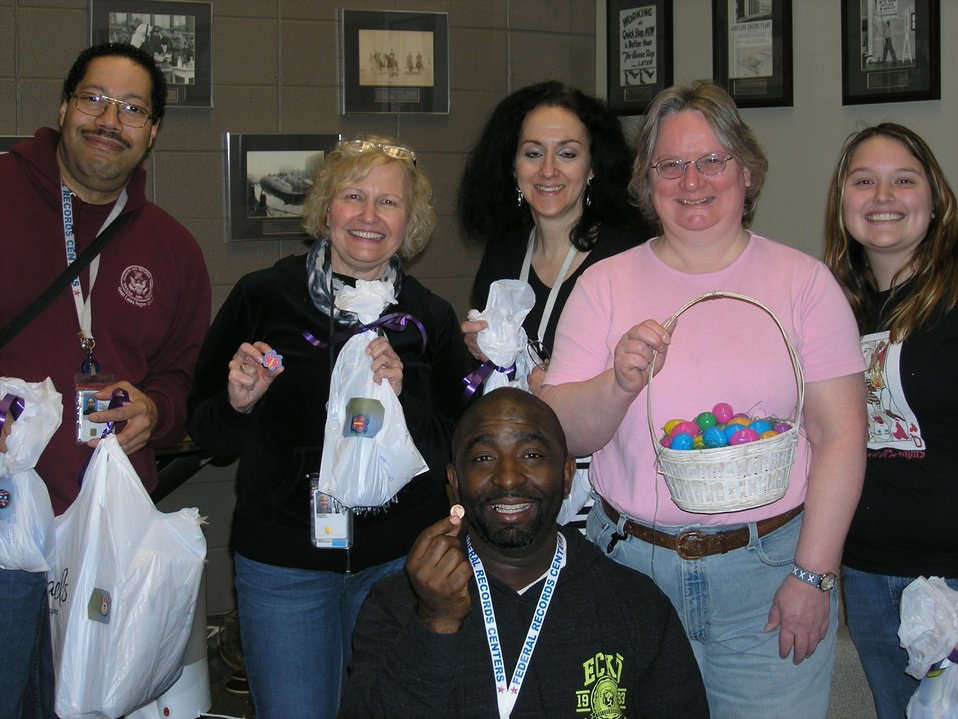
Kevin Strickland, Pam Wegner, Katie Dishman, Wendy Norton, Jimmie Greenlee, and Sydney Garland receive a prize for playing the egg hunt game; Location: Chicago Federal Records Center, Chicago, IL